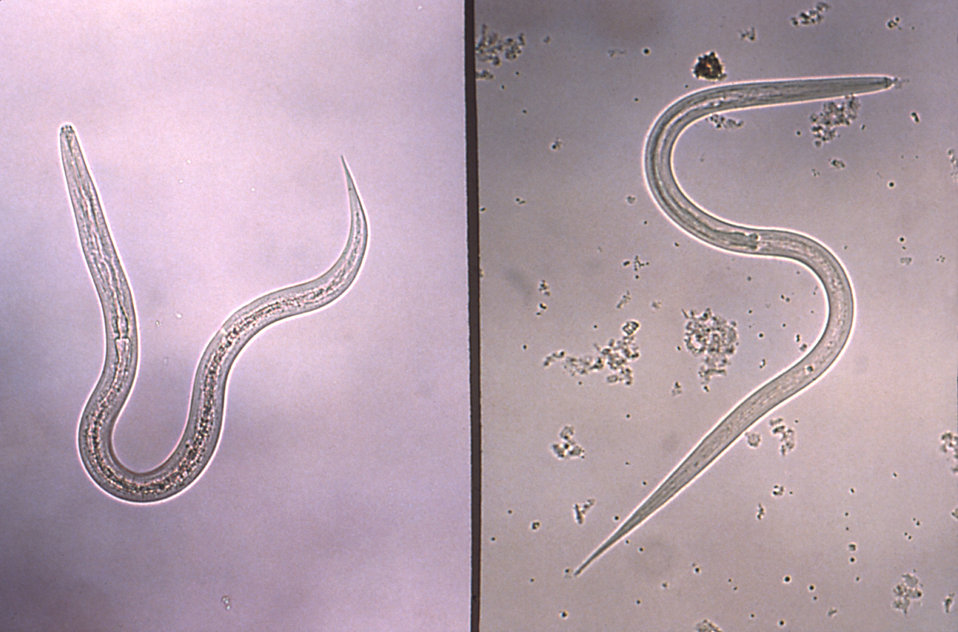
This micrograph depicts a hookworm (Lt), and a Strongyloides (Rt) filariform infective stage larvae.